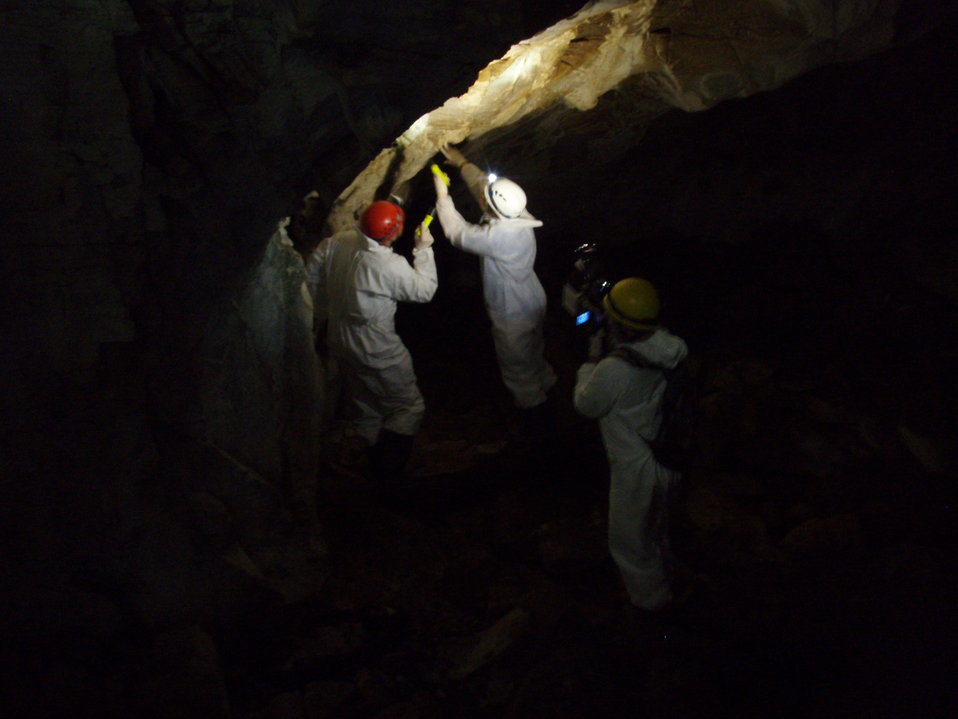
Researchers look for bats in Aeolus Cave

USFWS and Vermont Fish and Wildlife Department biologists look for live bats in Aeolus Cave.